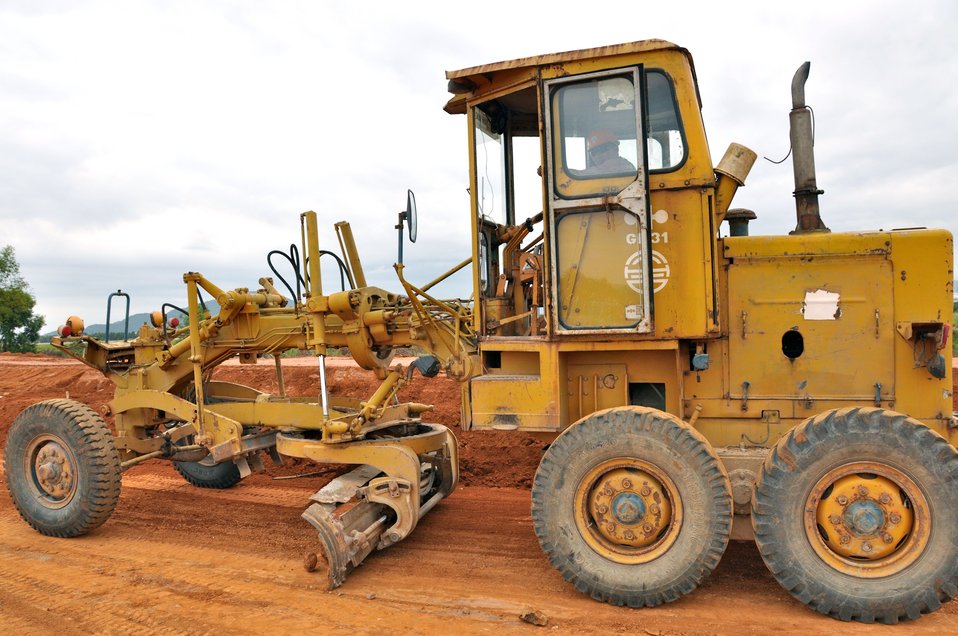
Site Preparation for Environmental Remediation of Dioxin Contamination at Danang Airport

Danang Airport, January 22, 2013